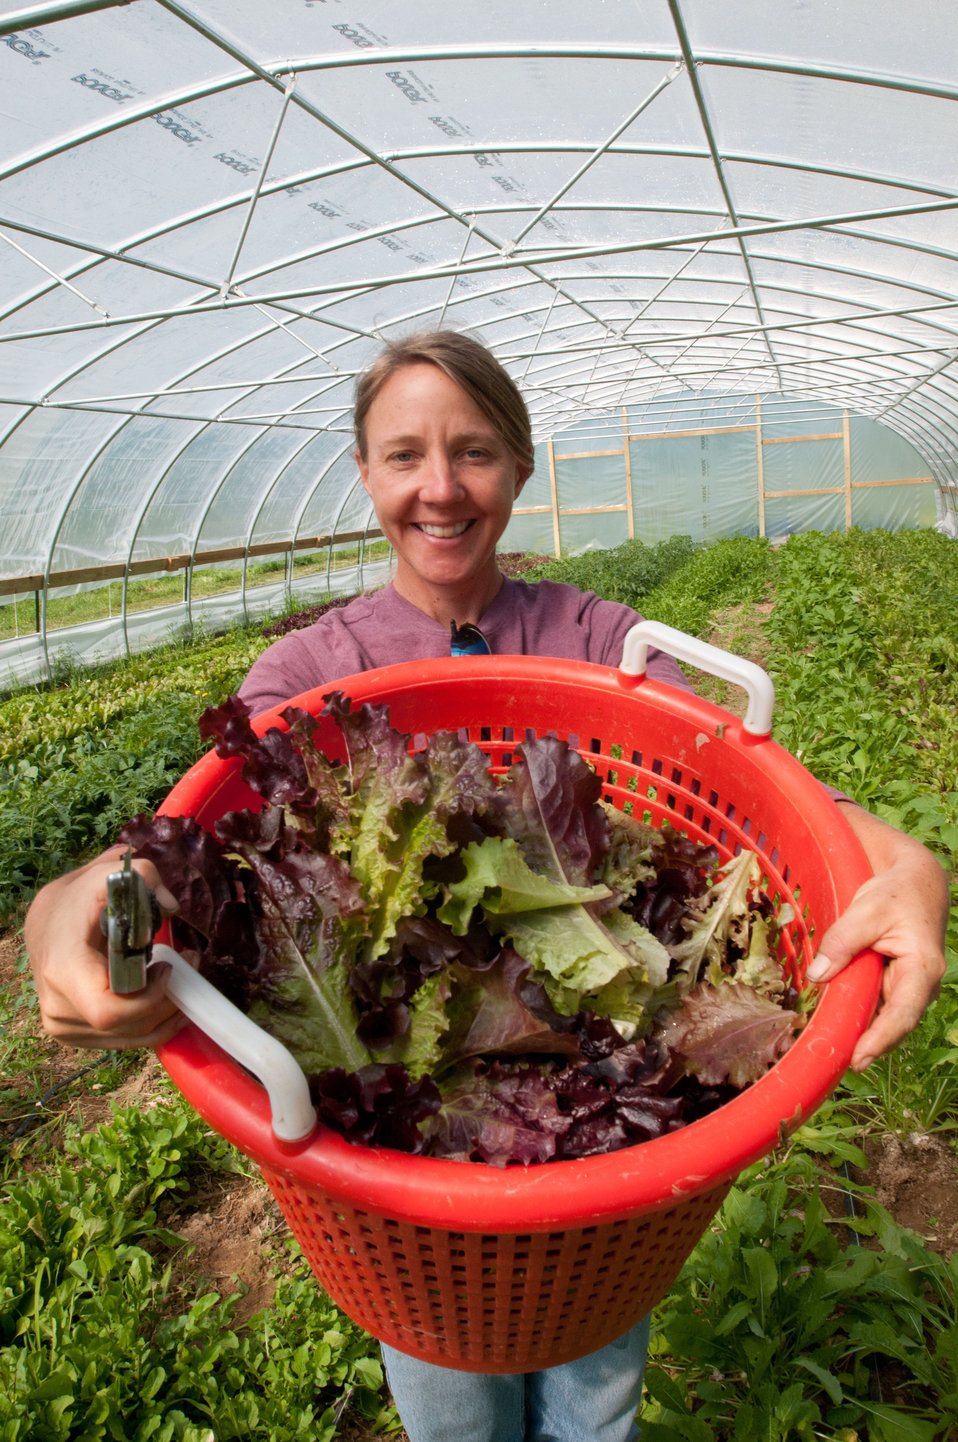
Fall Line Farms; cooperative, co-op; Richmond, VA.

Amy's Organic Garden owner Amy Hicks can be found this May 5, 2011 morning, harvesting the greens at her farm in Charles City, VA. Ms. Hicks' farm participates with Fall Line Farms a local food cooperative in the Richmond, VA area that offers a wide variety of household food staples and specialty items on an ever changing inventory of fruits, vegetables, meats, soaps, eggs, cheeses, flowers, honey, pastas, sauces, syrups, baked goods, mushrooms, flour and grains. Suppliers post what they have on a Lulus Local Food online listing and customers (who pay seasonal dues) can make their selection. Then every Thursday suppliers team up with other suppliers to deliver orders to, one of several pick-up points, designated by the customer in or around the Richmond area.